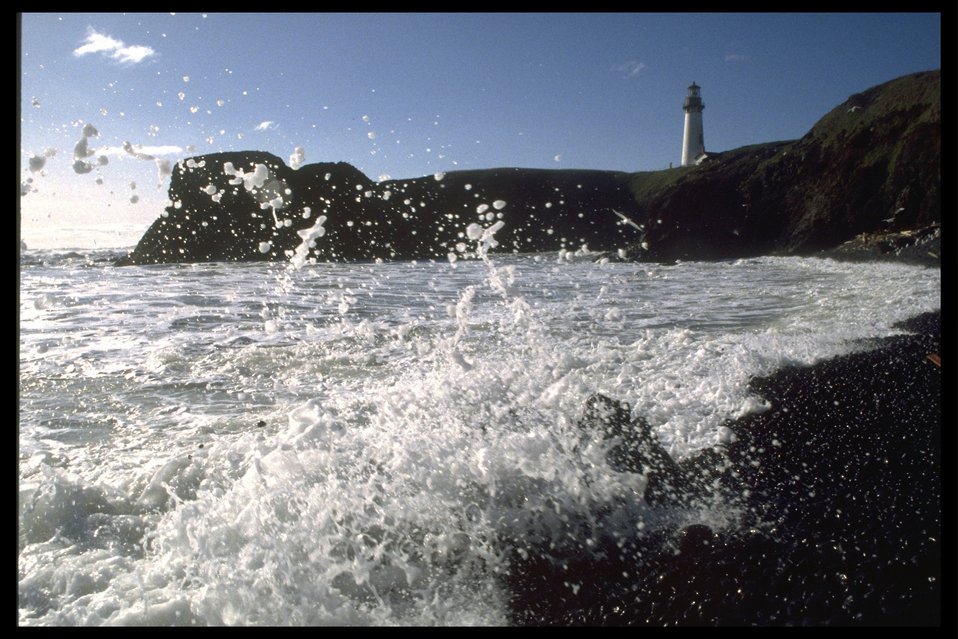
Yaquina Head Lighthouse.